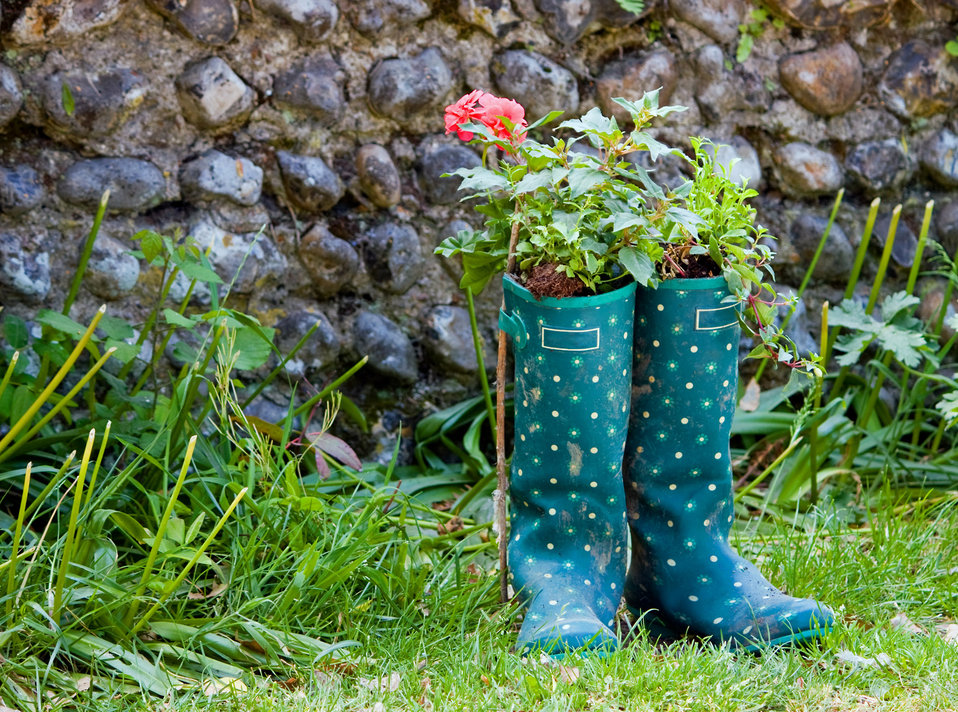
Wellington boots & flowers

Pretty green wellington boots with flowers growing inside.